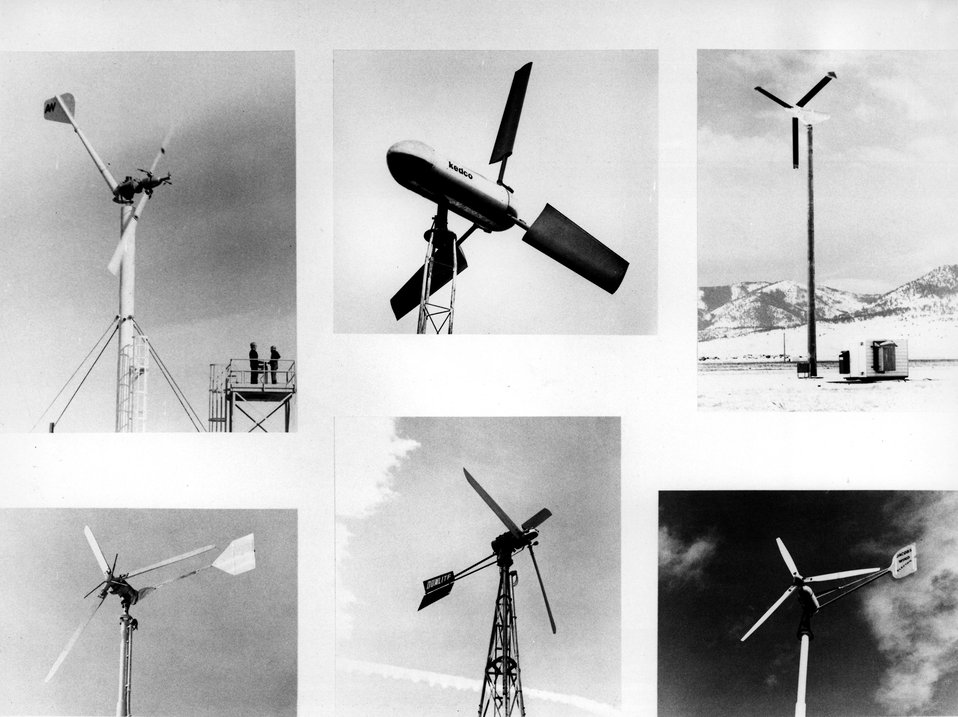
c. 1977